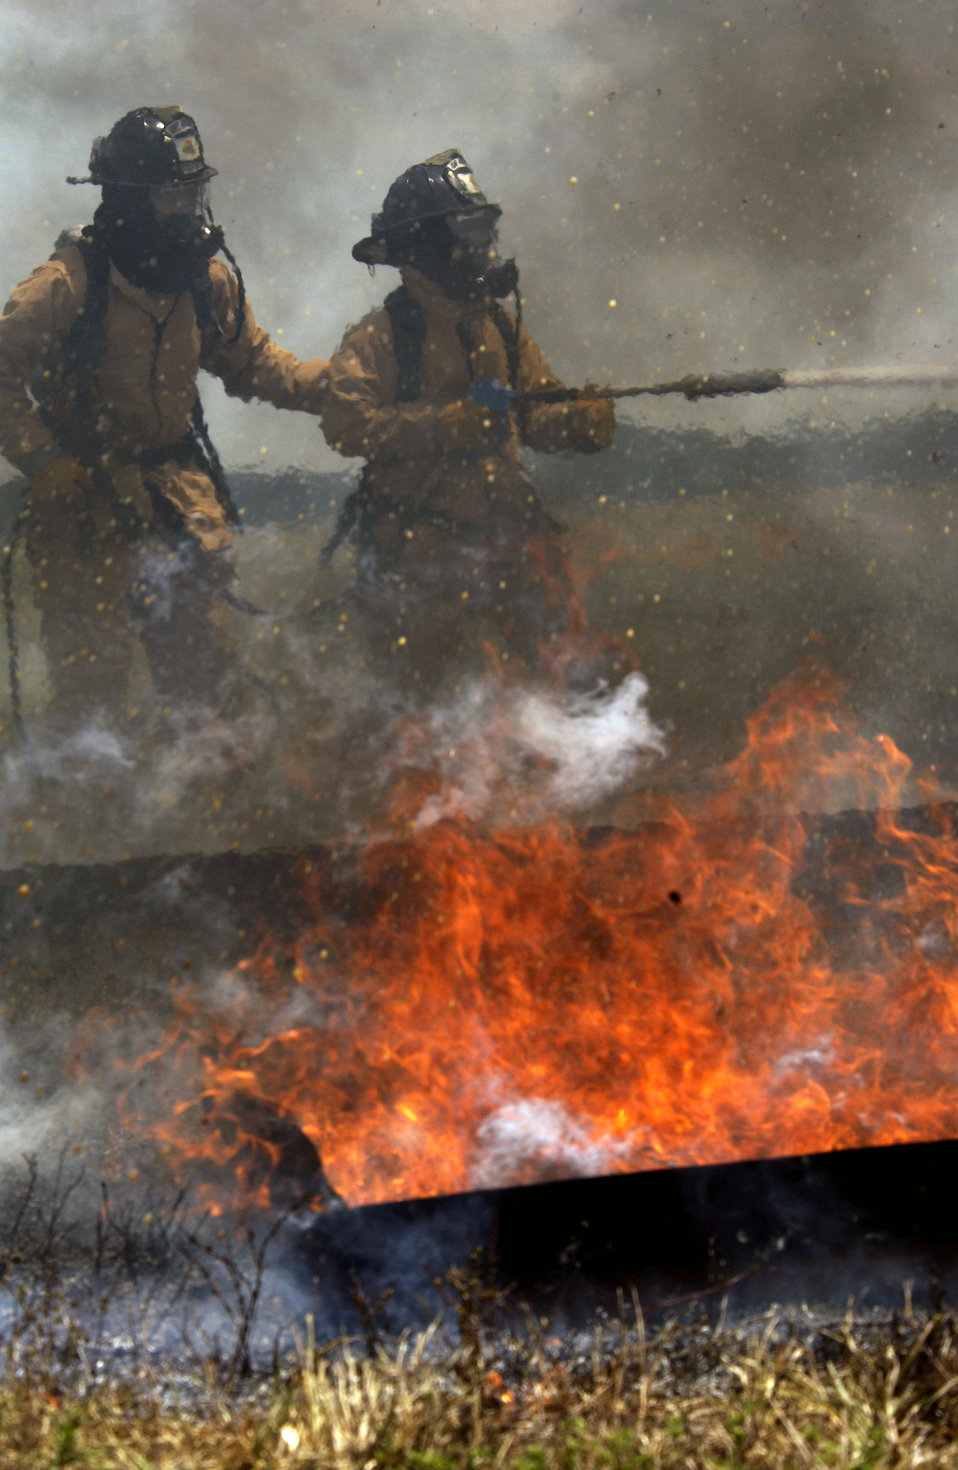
Fighting flames

AVON PARK AIR RANGE, Fla. -- Airborne Red Horse firefighters put out a fire from a simulated helicopter accident during exercise Safe Flag here May 4.